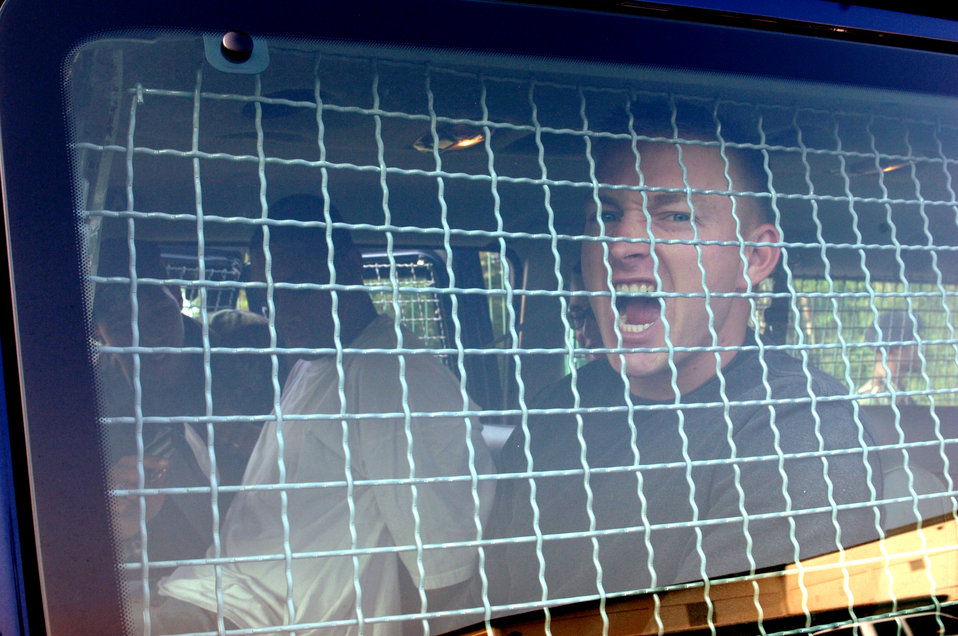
Confrontation management exercise

Airman 1st Class Jeffrey Alvis sits in a security forces van after being apprehended by gate guards during a confrontation managment exercise at Vogelweh Air Station, Germany, on Aug. 4. Airman Alvis is with the 569th U.S. Forces Police Squadron.